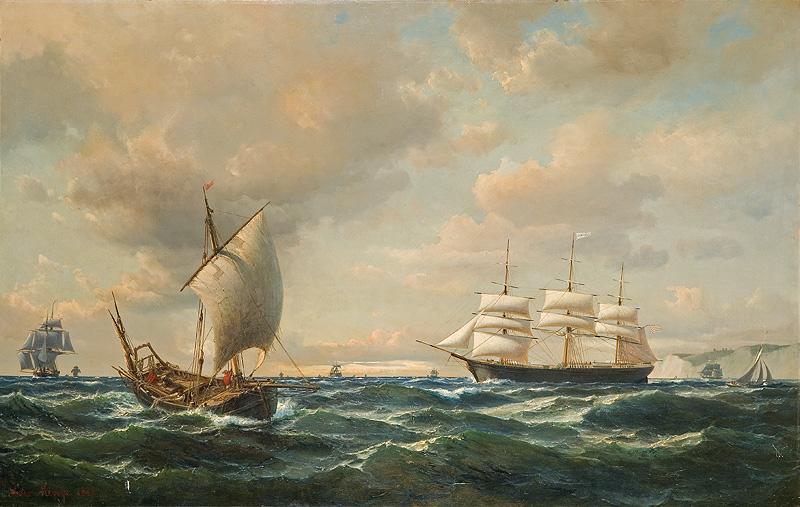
Anton Melbye - Sejlads ud for engelske kyst